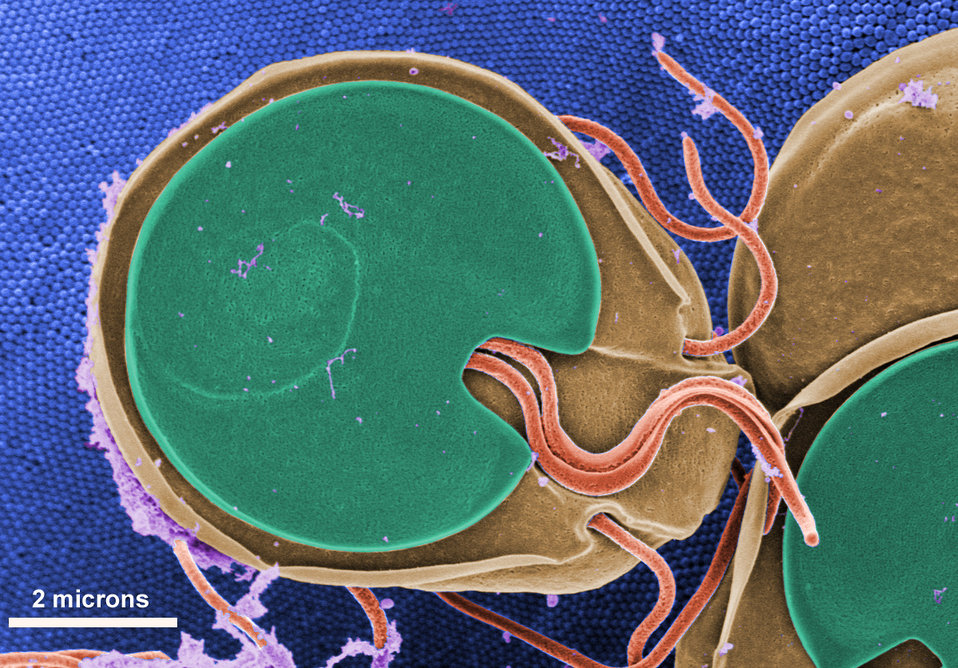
This scanning electron micrograph (SEM) revealed the ventral surface of a Giardia muris trophozoite that had settled atop the mucosal surface of a rat's intestine. Note the microvilli, which can be seen in the background, as tiny rounded structures that are approximately 0.15 microns in diameter. These microvilli cover the surface of each intestinal epithelial cell. The Giardia's ventral adhesive disk resembles a suction cup, where overlapping microtubules in the cytoplasm form a number-6-shaped figure. The edge of the suction cup, called the ventrolateral flange, partially encircles the adhesive disk and is absent posteriorly where a ventral pair of flagella emerges from above, dorsal to the disk. Giardia muris has four pairs of flagella that are responsible for the organism's motility. The adhesive disk facilitates adherence to the intestinal surface.